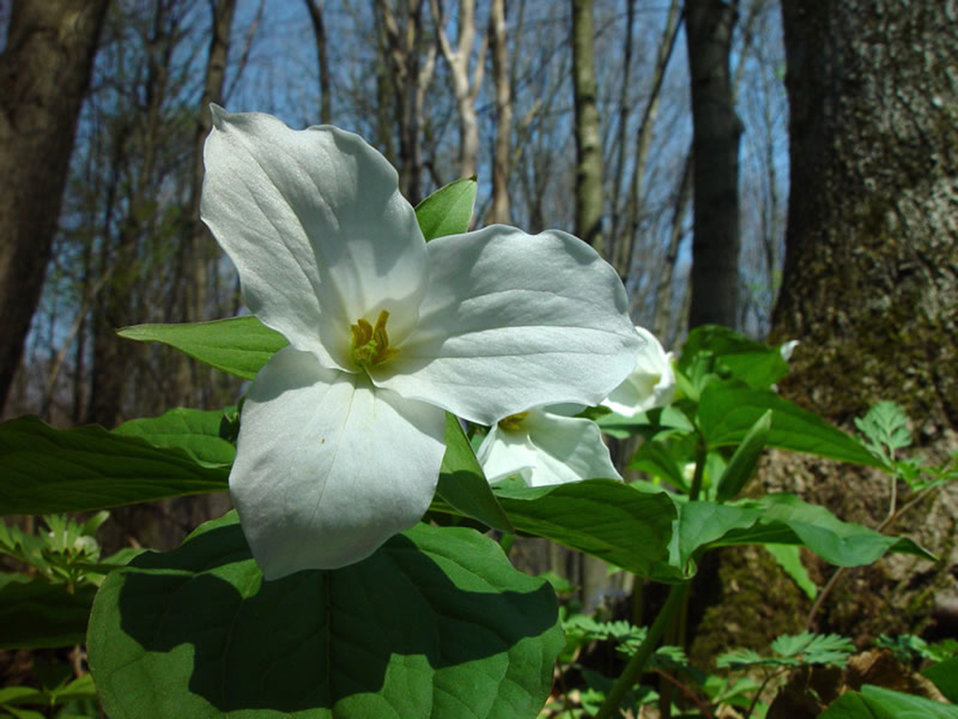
Trillium 08 Allegheny WW

Trillium (Alleghany) Trilliums prefer the filtered light of a maturing forest. National forests and grasslands are great wildflower viewing destinations spring, summer and fall.